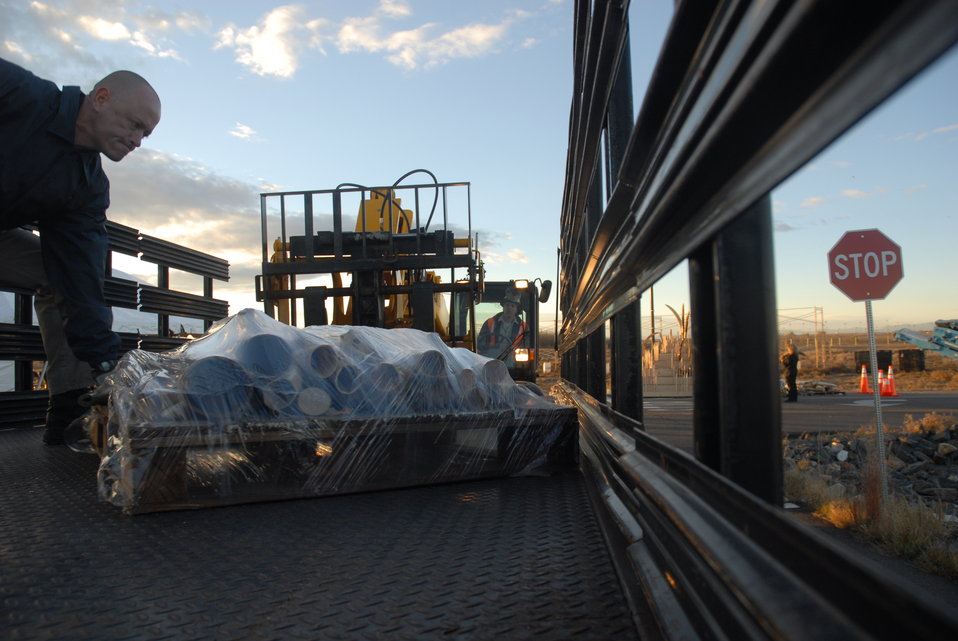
Before sunrise crews began loading ivory which FWS seized during undercover investigations of organized smuggling operations or confiscating at the U.S. border over the past 25 years.